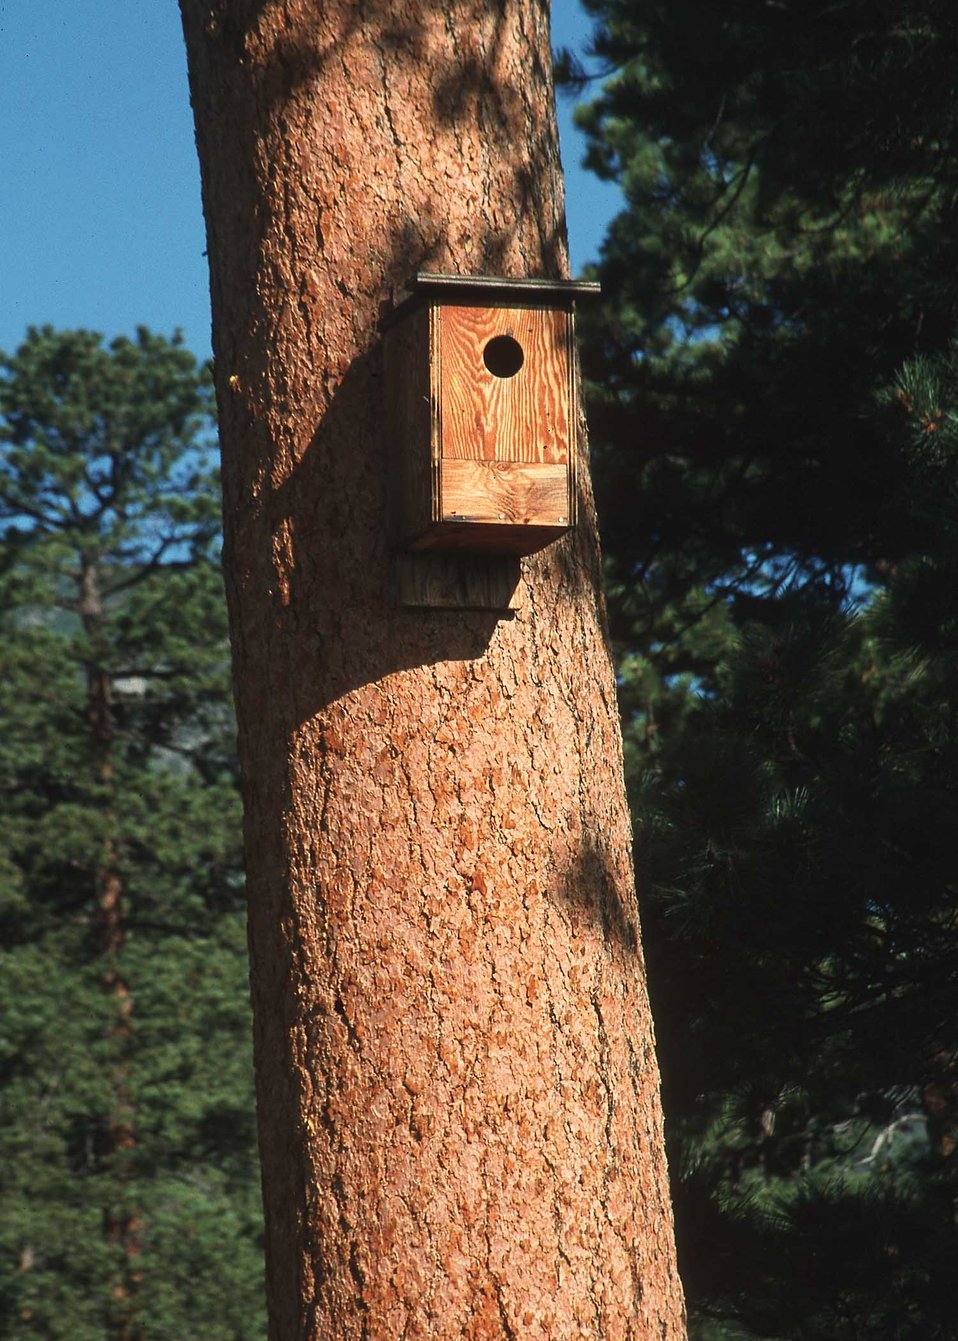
Mtn. Bluebird House, McGregor Ranch, RMNP, CO.